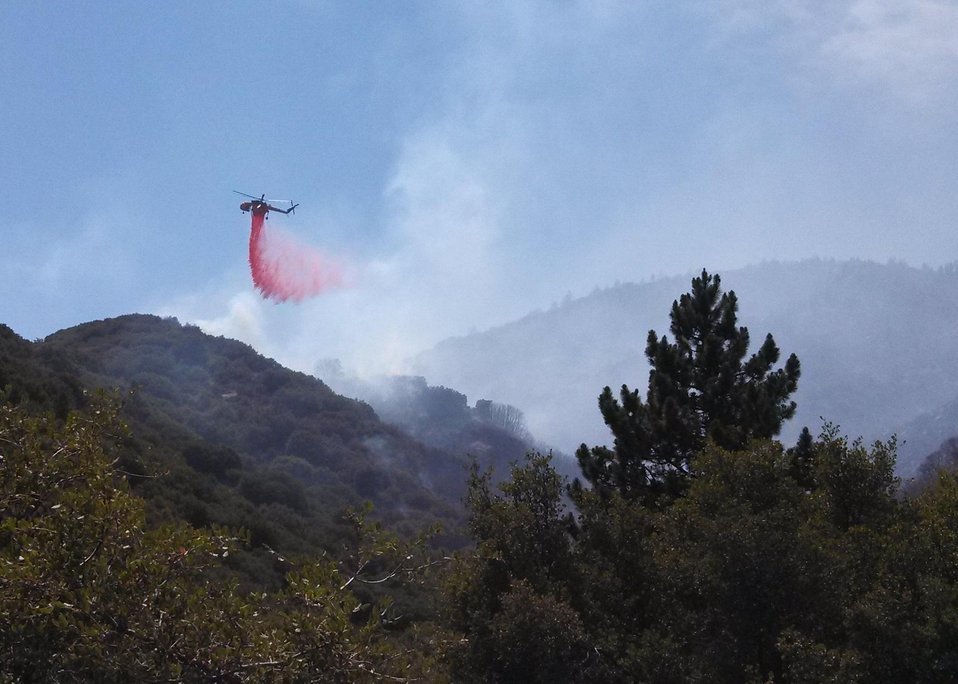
A helitanker makes a fire retardant drop on the Hathaway Fire. The Hathaway Fire is east of Hathaway Canyon on the northern portion of the Morongo Indian Reservation in the San Gorgonio Wilderness near Palm Springs, CA began on started Jun. 9, 2013 and the cause is still to be determined. The fire has burned approximately 3, 825 acres and is 95% contained as of Jun. 25, 2013.